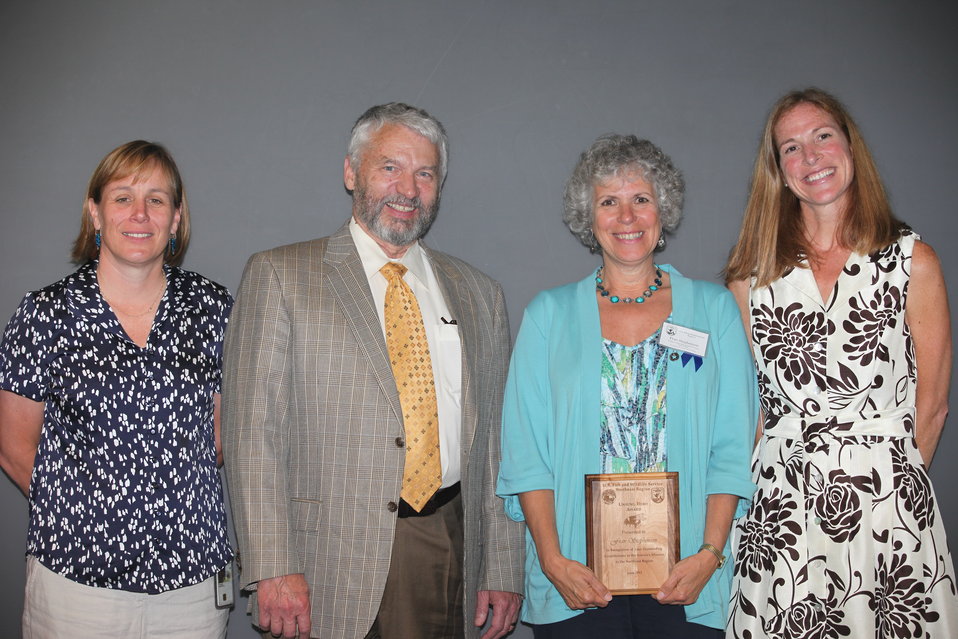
Fran Stephenson of the Wallkill River National Wildlife Refuge was awarded the Region 5 Unsung Hero Award.
From left to right: Deputy Regional Director Deb Rocque, Deputy Director Rowan Gould, Fran Stephenson and Regional Director Wendi Weber